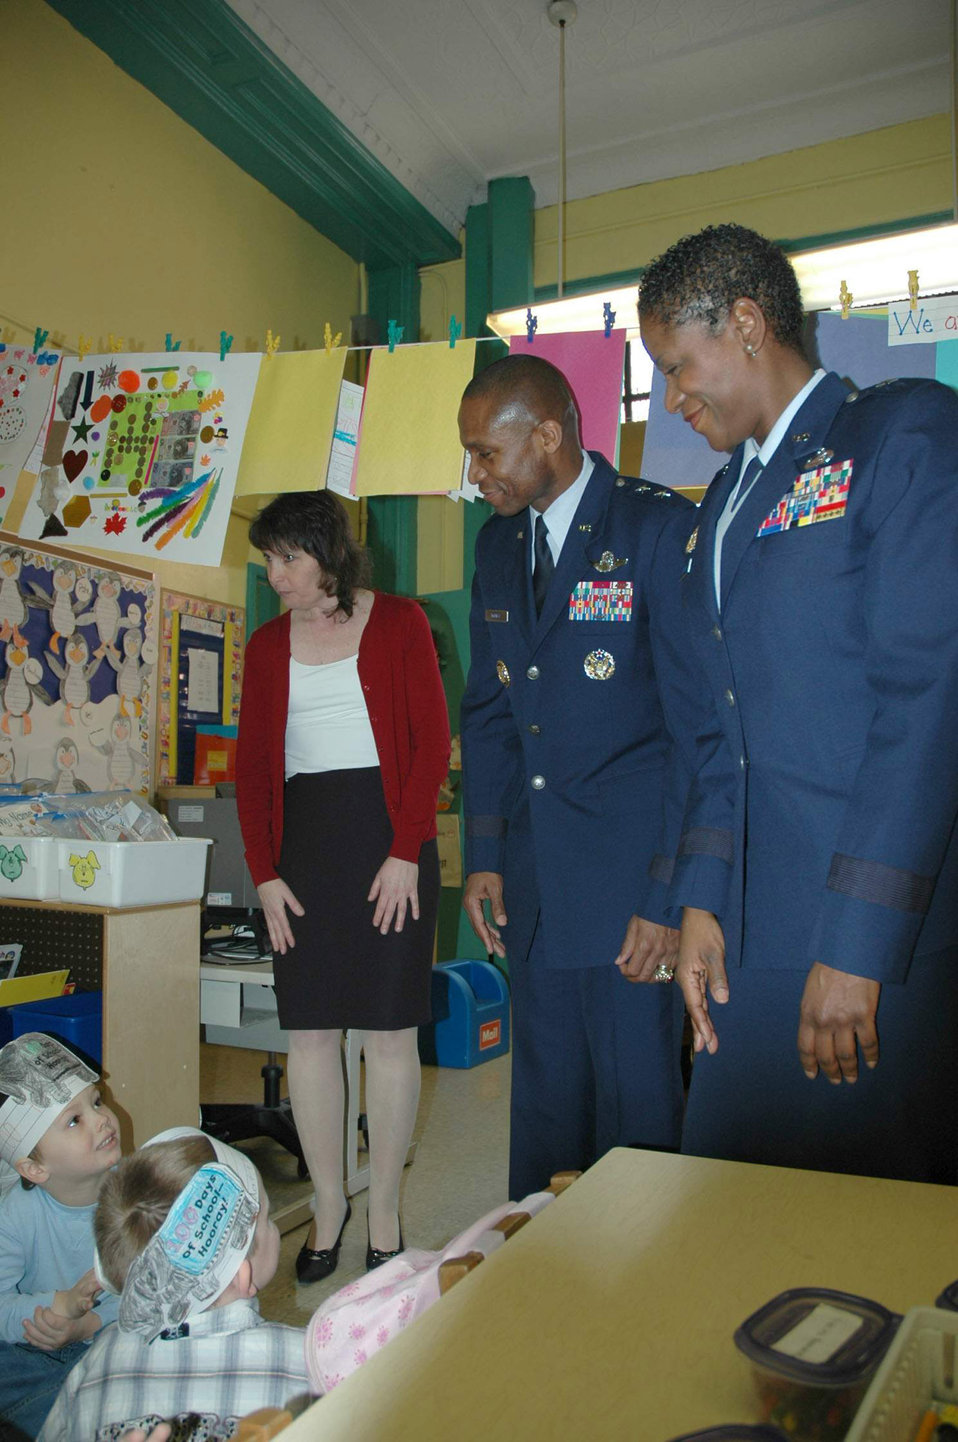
Generals re-enforce 'citizenship day' with core values

Maj. Gen. Darren W. McDew and Brig. Gen. Allyson Solomon visited the students of Public School 34, Brooklyn, NY, during the school's Citizenship Day Feb. 11. Both Generals McDew and Solomon were guest speakers for the school's event, where they spoke about what exemplifies a great citizen. General McDew is the director of Public Affairs, Office of the Secretary of the Air Force. General Solomon is the assistant adjutant general for the Maryland Air National Guard and special assistant to the National Guard Bureau chief.